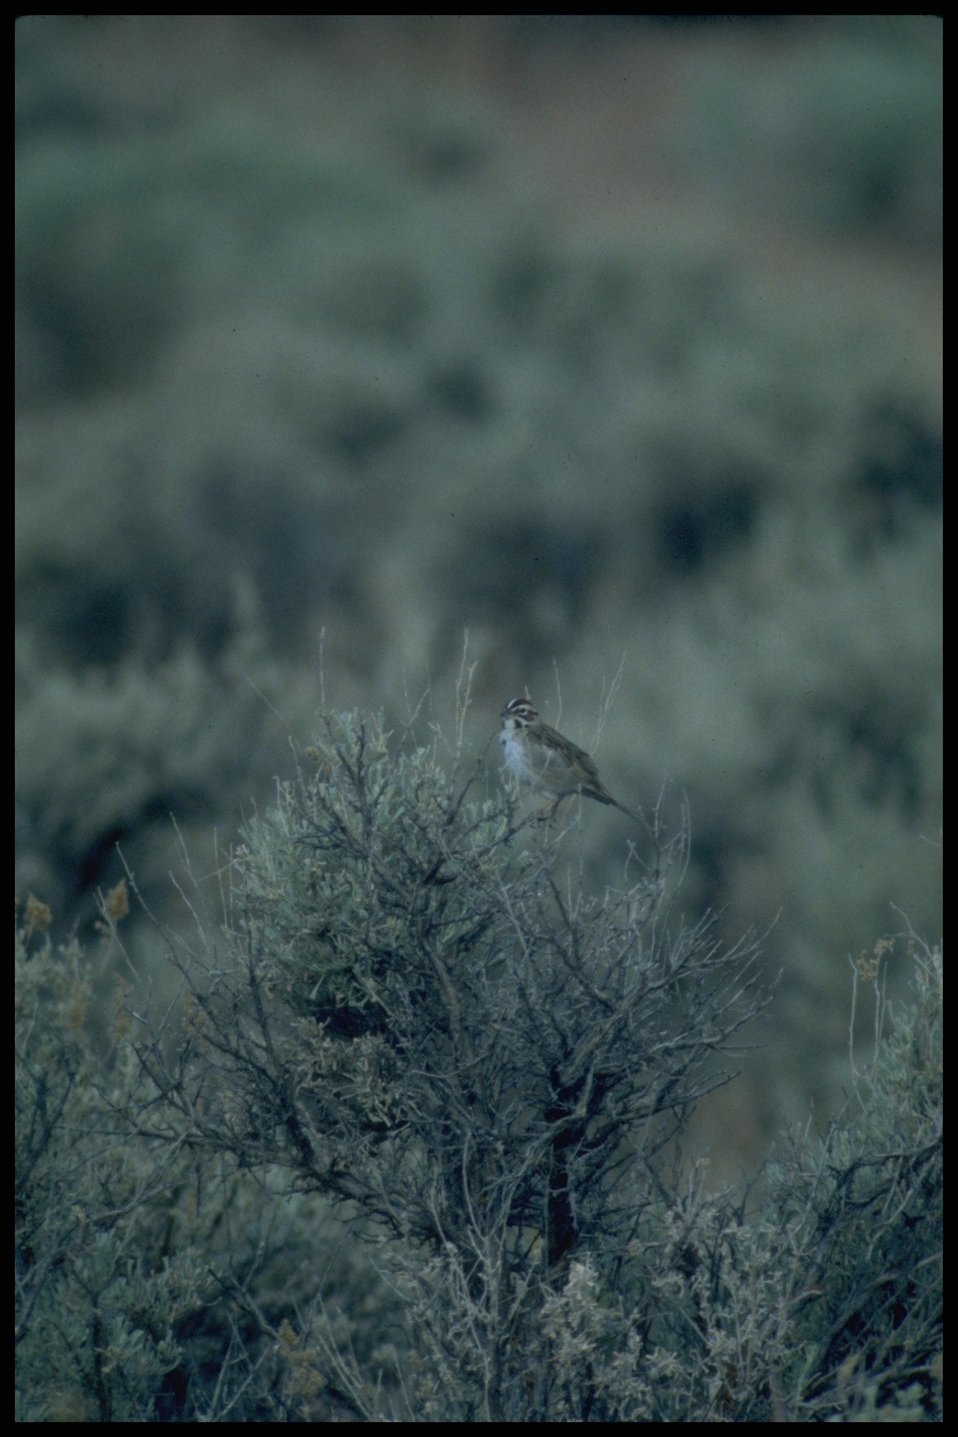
Far shot of sparrow, Lakeview District.